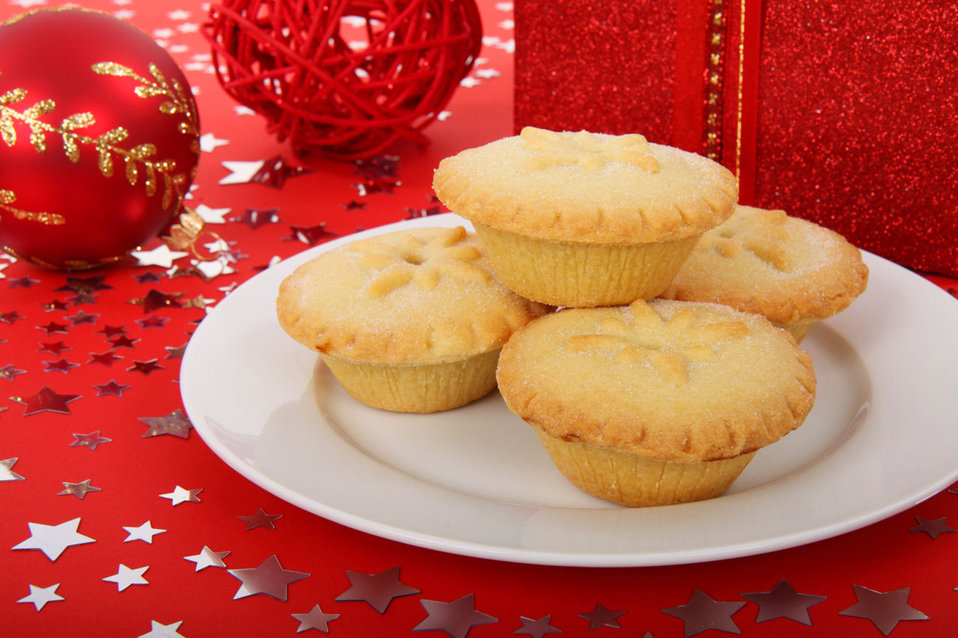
Mince pies

Christmas mince pies on plate with red decoration.